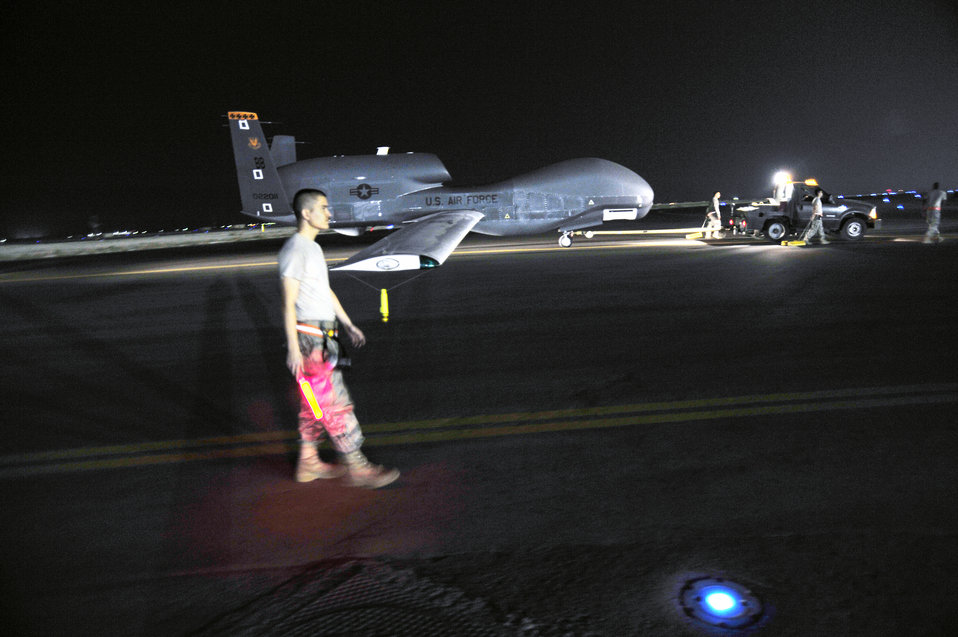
Maintaining the 'hawk'

Airmen of the 380th Expeditionary Aircraft Maintenance Squadron tow an RQ-4 Global Hawk Oct. 22, 2009, on an air base in Southwest Asia. The Global Hawk unmanned aircraft system just returned from a mission supporting Operation Enduring Freedom.